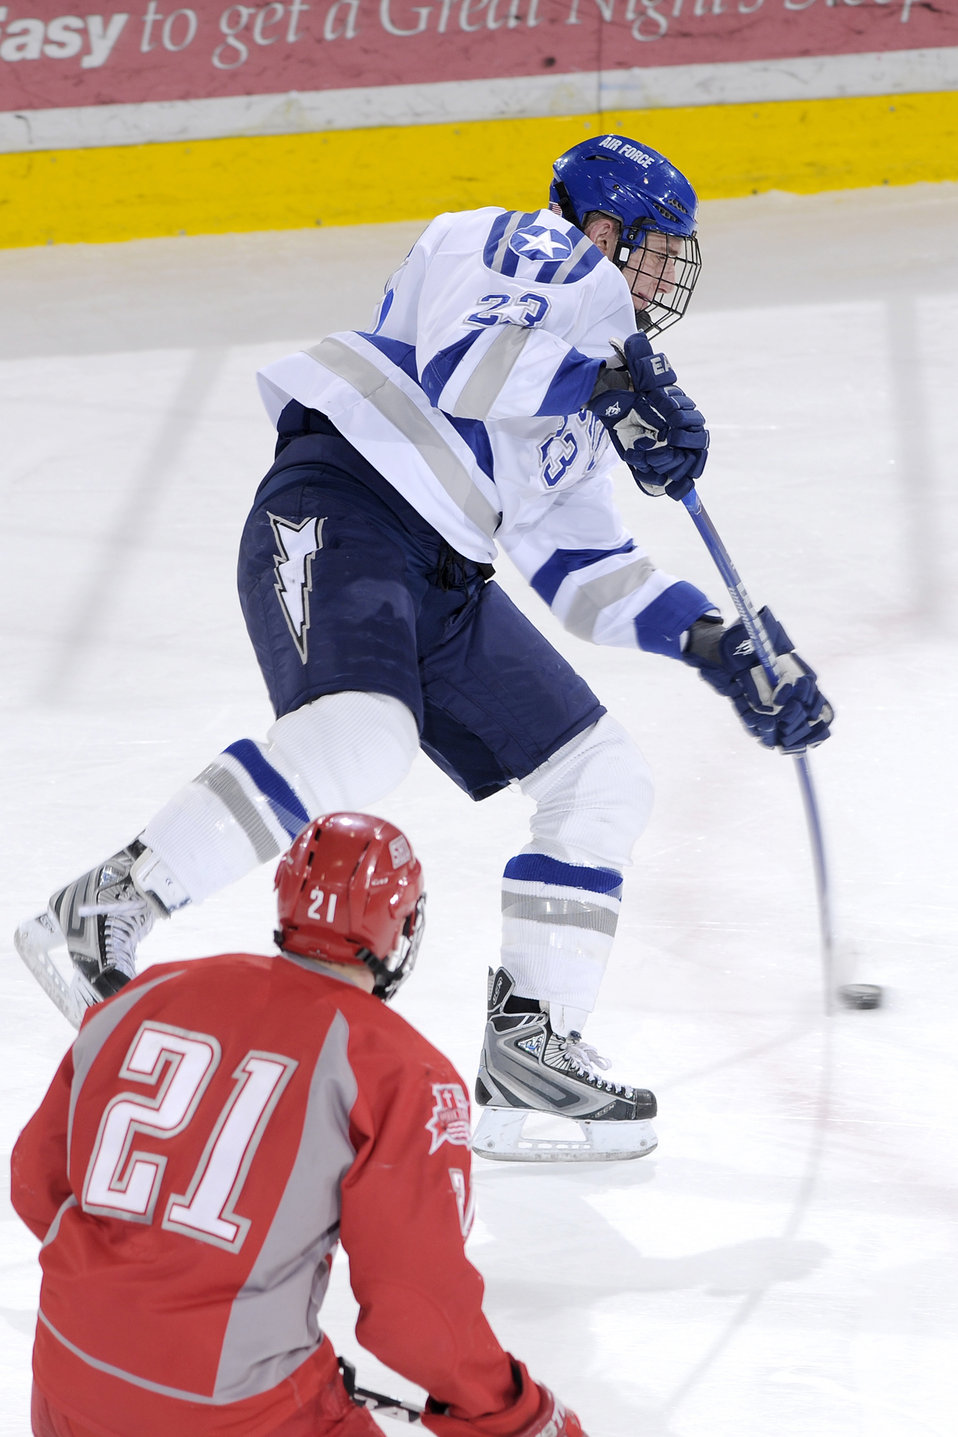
Falcons hockey team beats Pioneers

Falcon sophomore defensive man Scott Mathis passes as Air Force scored a season high eight goals, beating the Sacred Heart Pioneers 8-1 Feb. 27, 2010, at the U.S. Air Force Academy's Cadet Ice Arena. The victory clinched third place in the Atlantic Hockey Association, improving to 14-14-6 overall and 14-8-6 in the AHA.